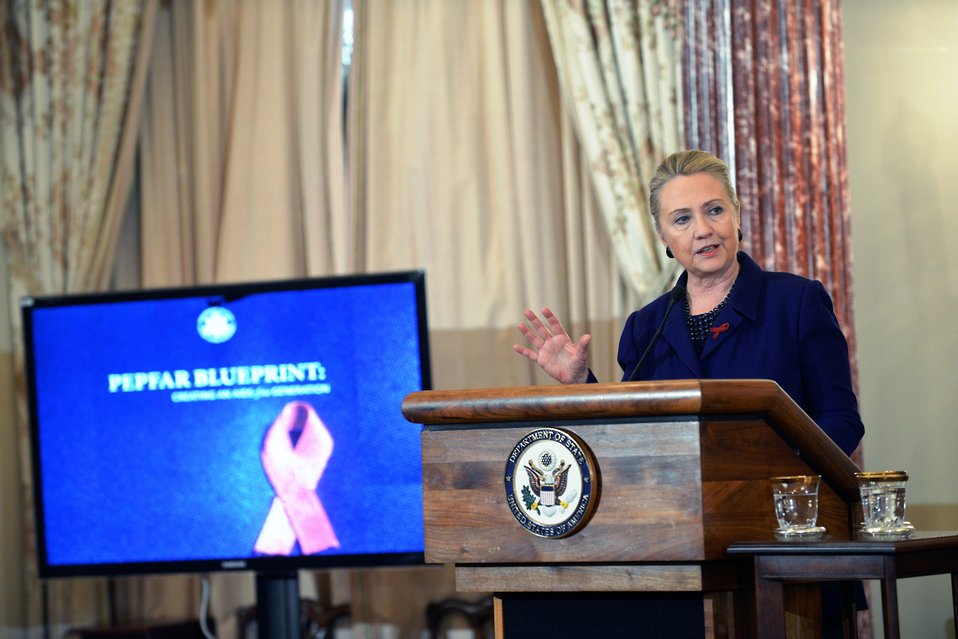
Secretary Clinton Delivers Remarks in Recognition of World AIDS Day

U.S. Secretary of State Hillary Rodham Clinton delivers remarks in recognition of World AIDS Day at the U.S. Department of State in Washington, D.C., November 29, 2012.